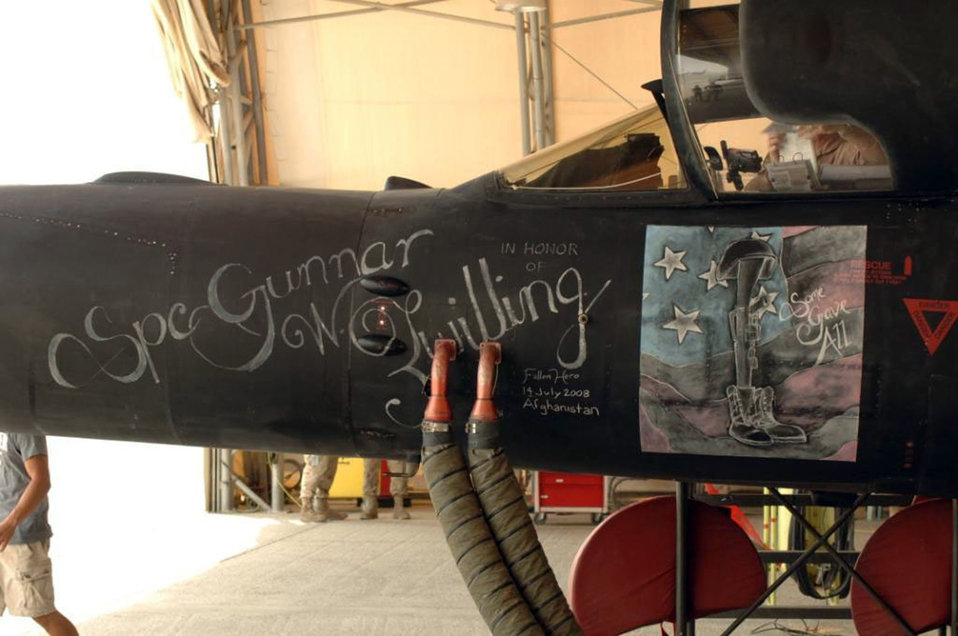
U-2 nose art honors fallen Soldier

A U-2 features chalk art honoring the late brother of crew chief A1C Alexander Zwilling.